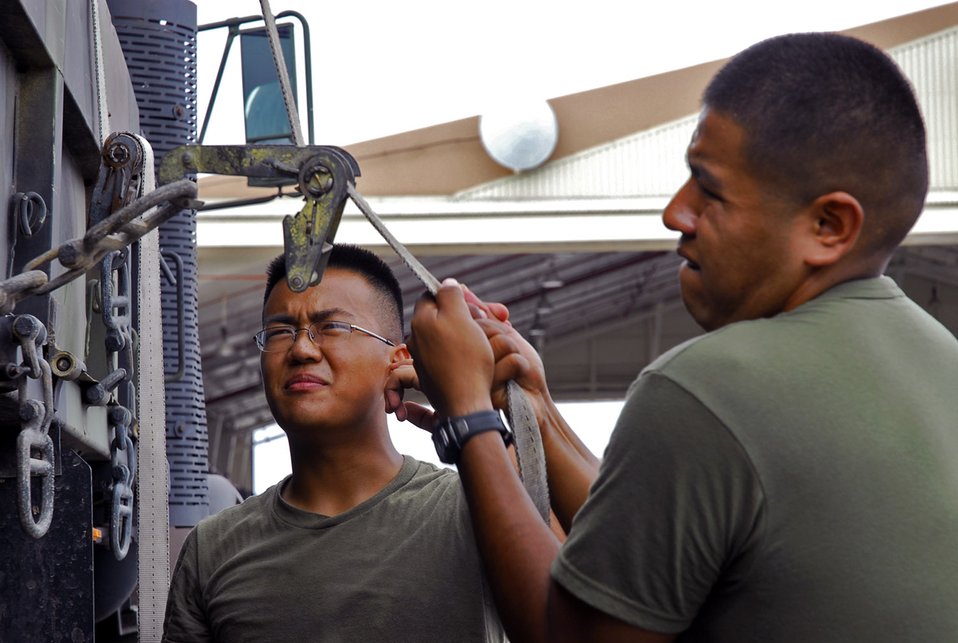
Kadena prepares for typhoon

Marine Lance Cpl. Saysavanh Mainvong (left) watches as Marine Cpl. Samuel Kee secures containers onto a truck before relocating them to a secure building in preparation for Typhoon Man-Yi July 12 at Kadena Air Base, Japan. The typhoon is the first of the year for Okinawa and is expected to make landfall July 13. The corporals are assigned to Marine Wing Liaison Kadena.